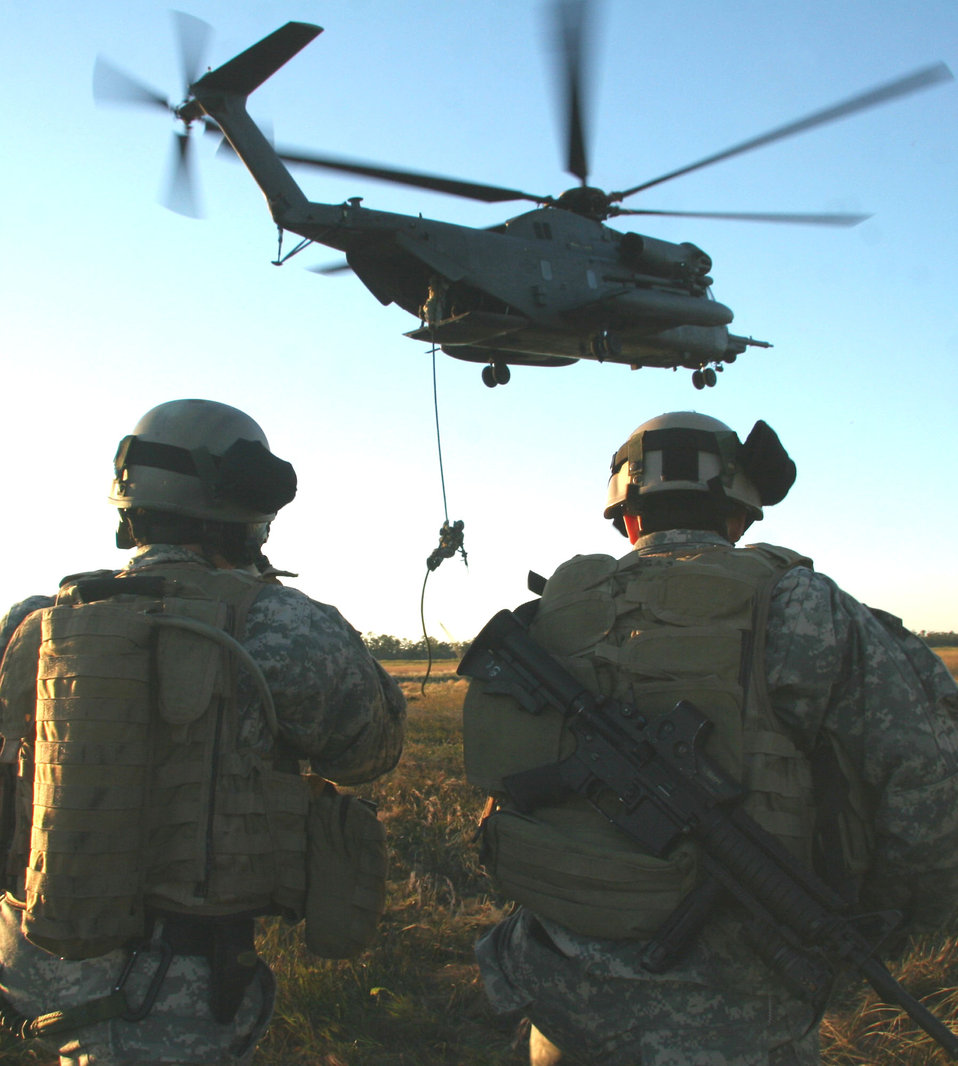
'Fast-roping' at Emerald Warrior

Green Berets practice